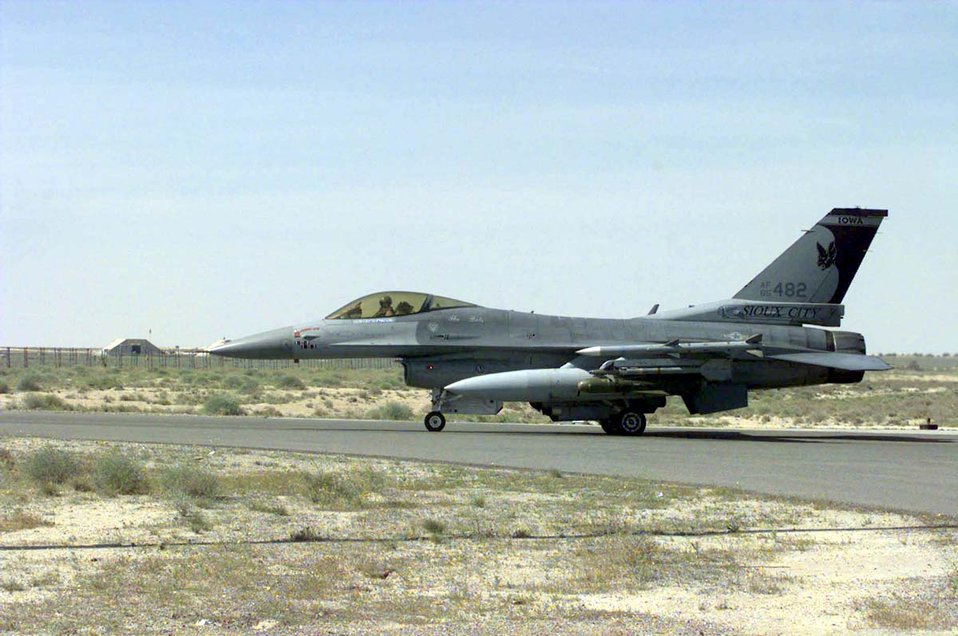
A long way from home

AHMED AL JABER AIR BASE, Kuwait -- An F-16 Fighting Falcon from the 114th Fighter Wing, Joe Foss Field, Sioux Falls, S.D., taxis out on the runway here.